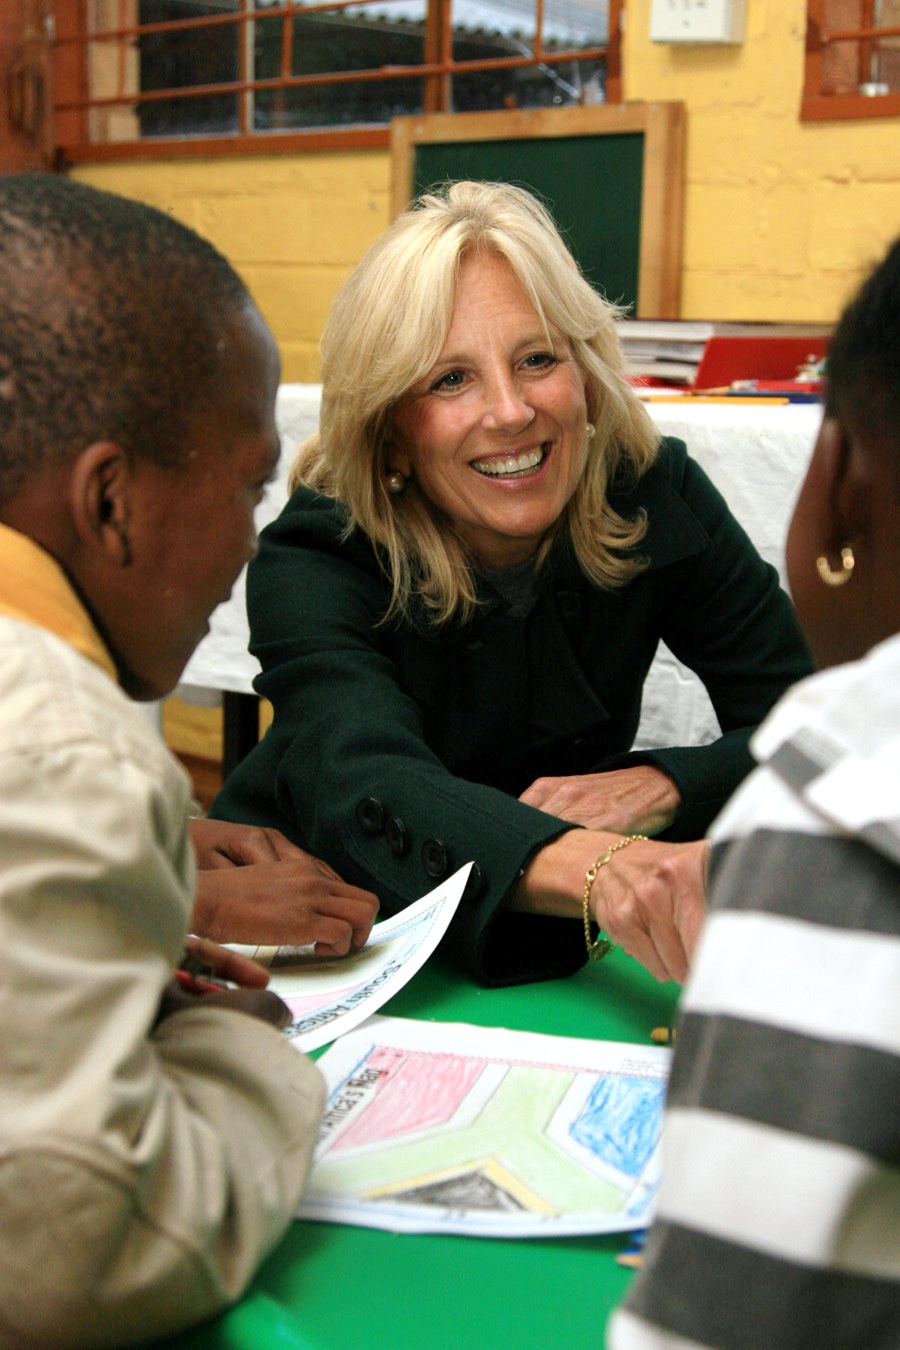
Dr. Jill Biden Helps Children With Their Coloring Skills

Dr. Jill Biden, wife of Vice President Joseph Biden, colors the South African flag with children during her visit to Mapetla Day Care Centre in Soweto, Johannesburg, South Africa, on June 10, 2010.